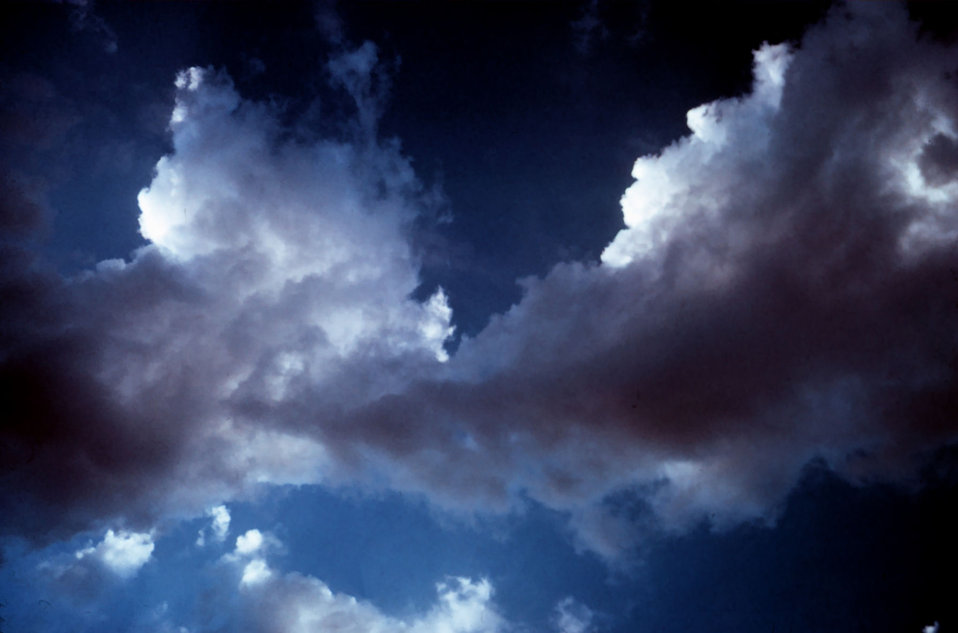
Fair weather cumulus